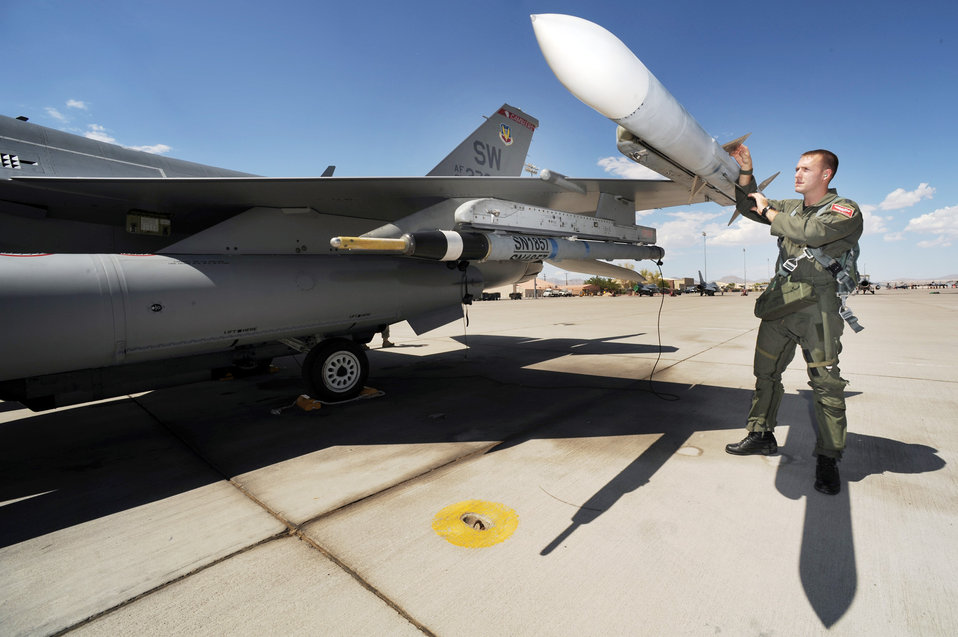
Realistic training with Red Flag

Capt. Taylor Blevins conducts pre-flight checks on an F-16CJ Wild Weasel before departing on a training mission July 16 at Red Flag 09-4 at Nellis Air Force Base, Nev. Red Flag is a highly-realistic combat training exercise that pits U.S. and allied nation air forces against